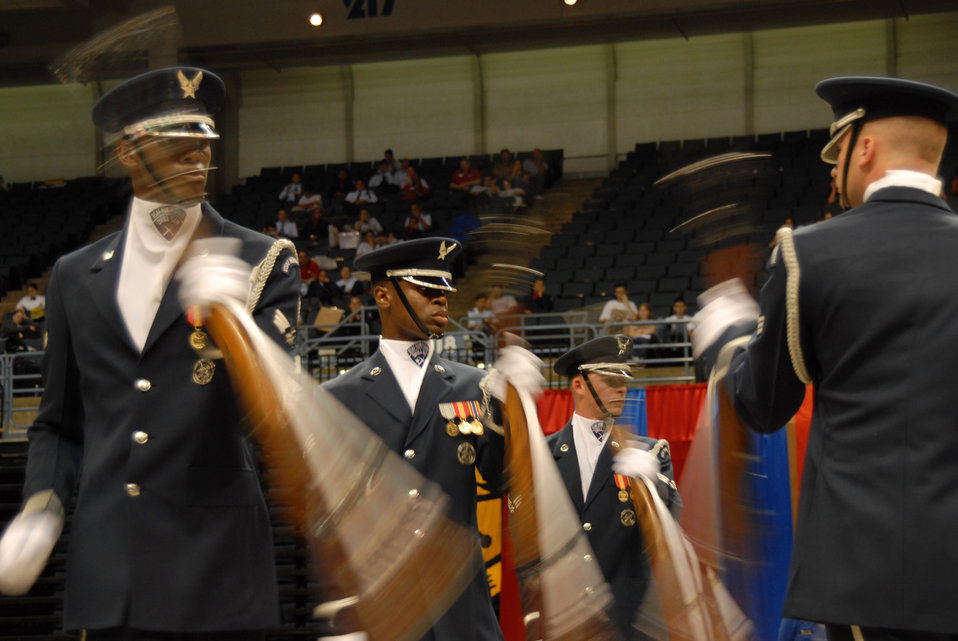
Air Force Honor Guard show competitors team espirit

The Air Force Honor Guard Drill Team performs at the National High School Drill Team Championships May 6 in Daytona, Fla. The team's performance was the last of their latest tour to Florida, where they also performed at the Fort Lauderdale Air and Sea Show.